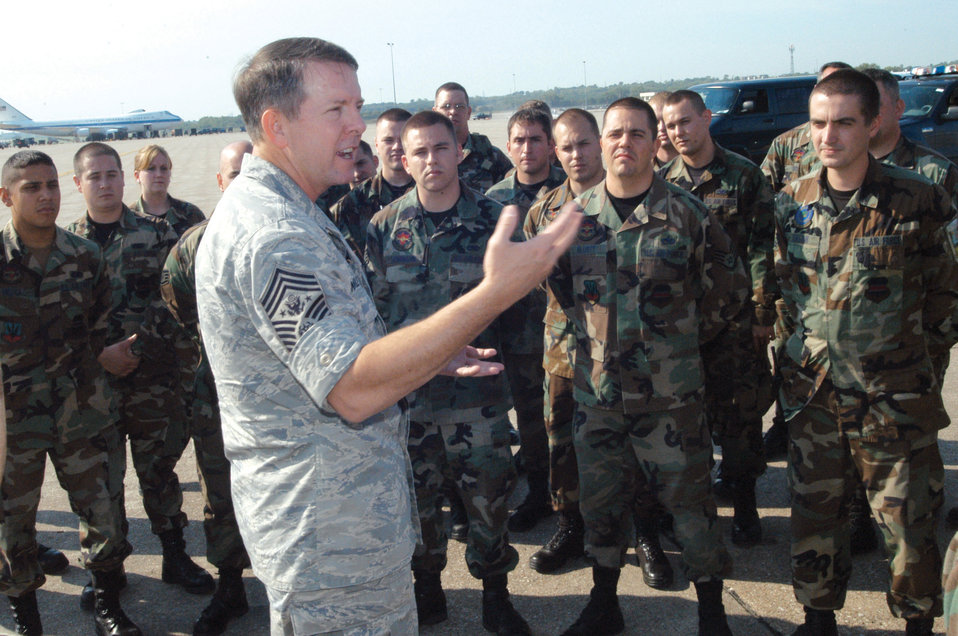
New product helps supervisors mentor Airmen

Chief Master Sgt. of the Air Force Rodney J. McKinley speaks to Airmen from Offutt Air Force Base, Neb., in September. Chief McKinley recently announced a new weekly publication titled